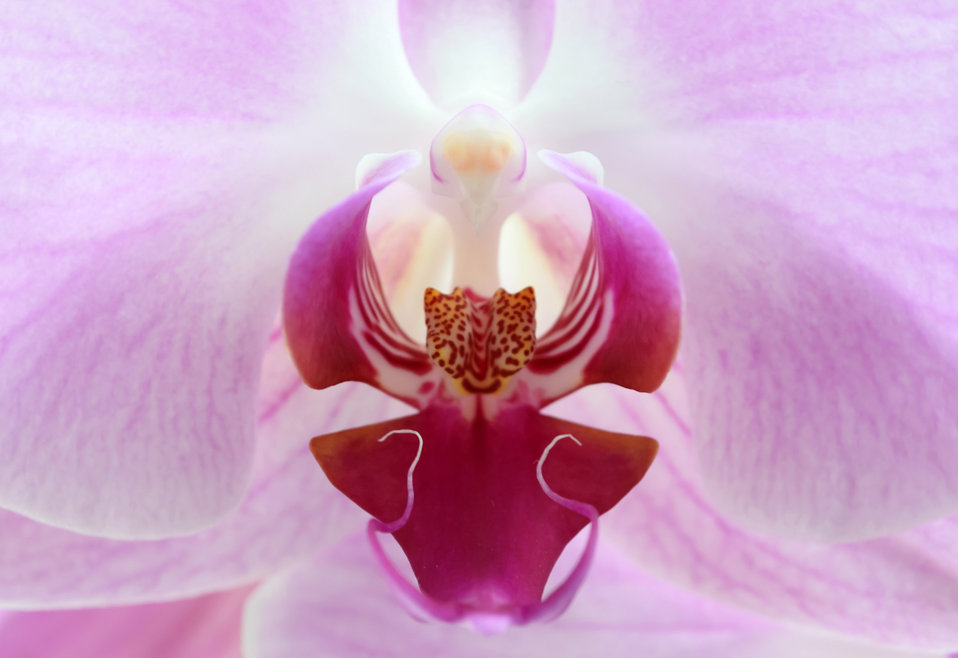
Orchid - macro.